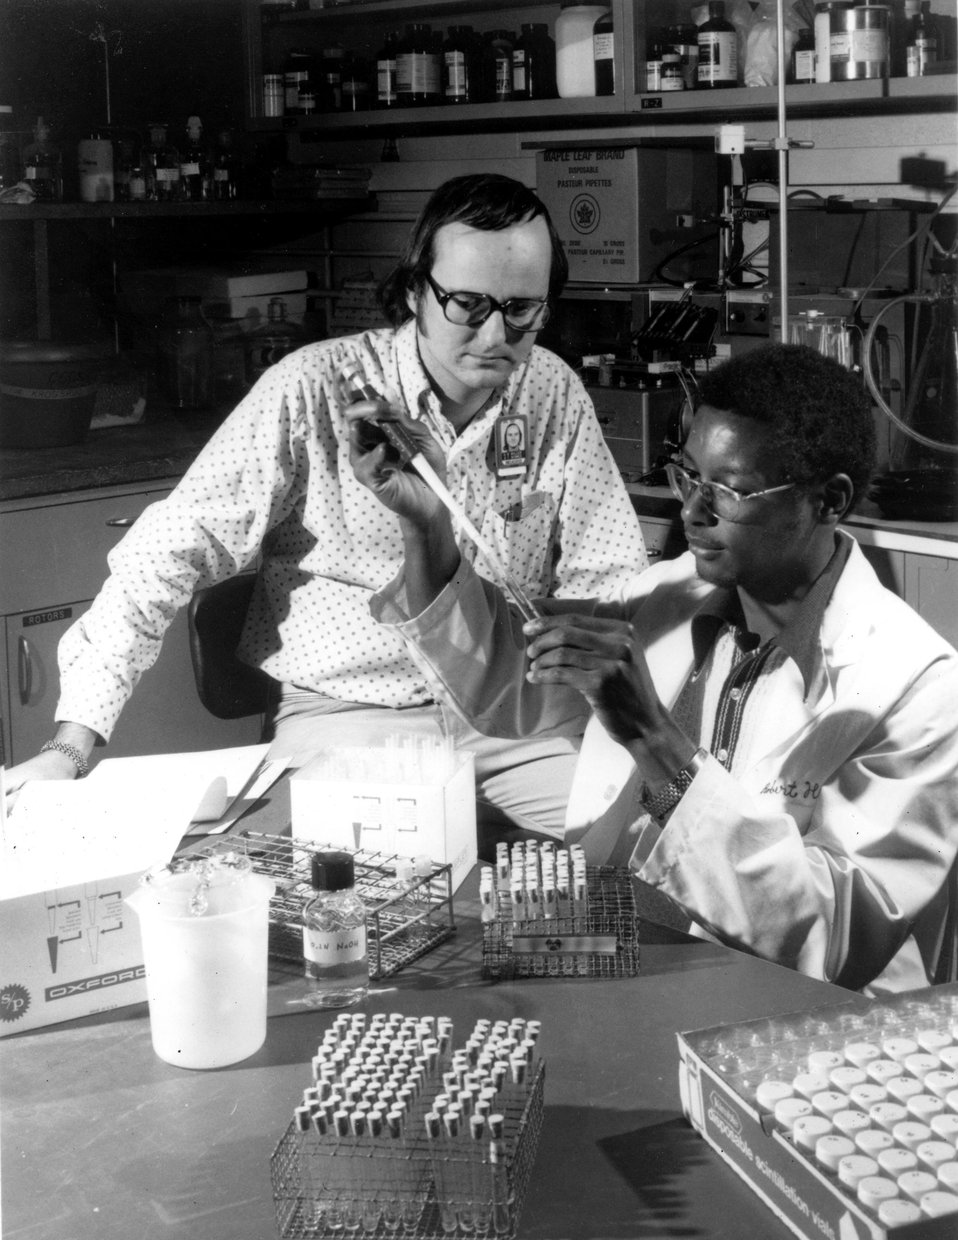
Two students in the University of Tennessee - Oak Ridge Graduate School of Biomedical Studies perform an assignment at U.S. Atomic Energy Commission's Oak Ridge National Laboratory Biology Division. c. 1974